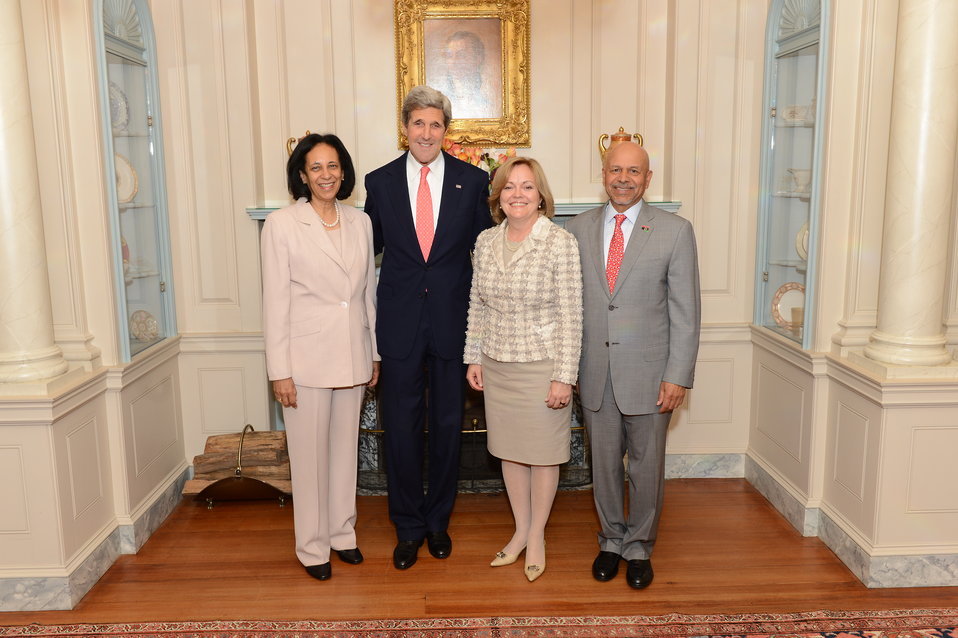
Secretary Kerry and Ambassador-Designate Jones Pose for a Photo With Ambassadors Aujali and Al-Mughairy

U.S. Secretary of State John Kerry and U.S. Ambassador-Designate to Libya Deborah Jones pose for a photo with Libyan Ambassador to the U.S. Ali Aujali, right, and Omani Ambassador to the U.S. Hunaina Al-Mughairy, left, prior to her swearing-in ceremony at the U.S. Department of State in Washington, D.C., on June 11, 2013.